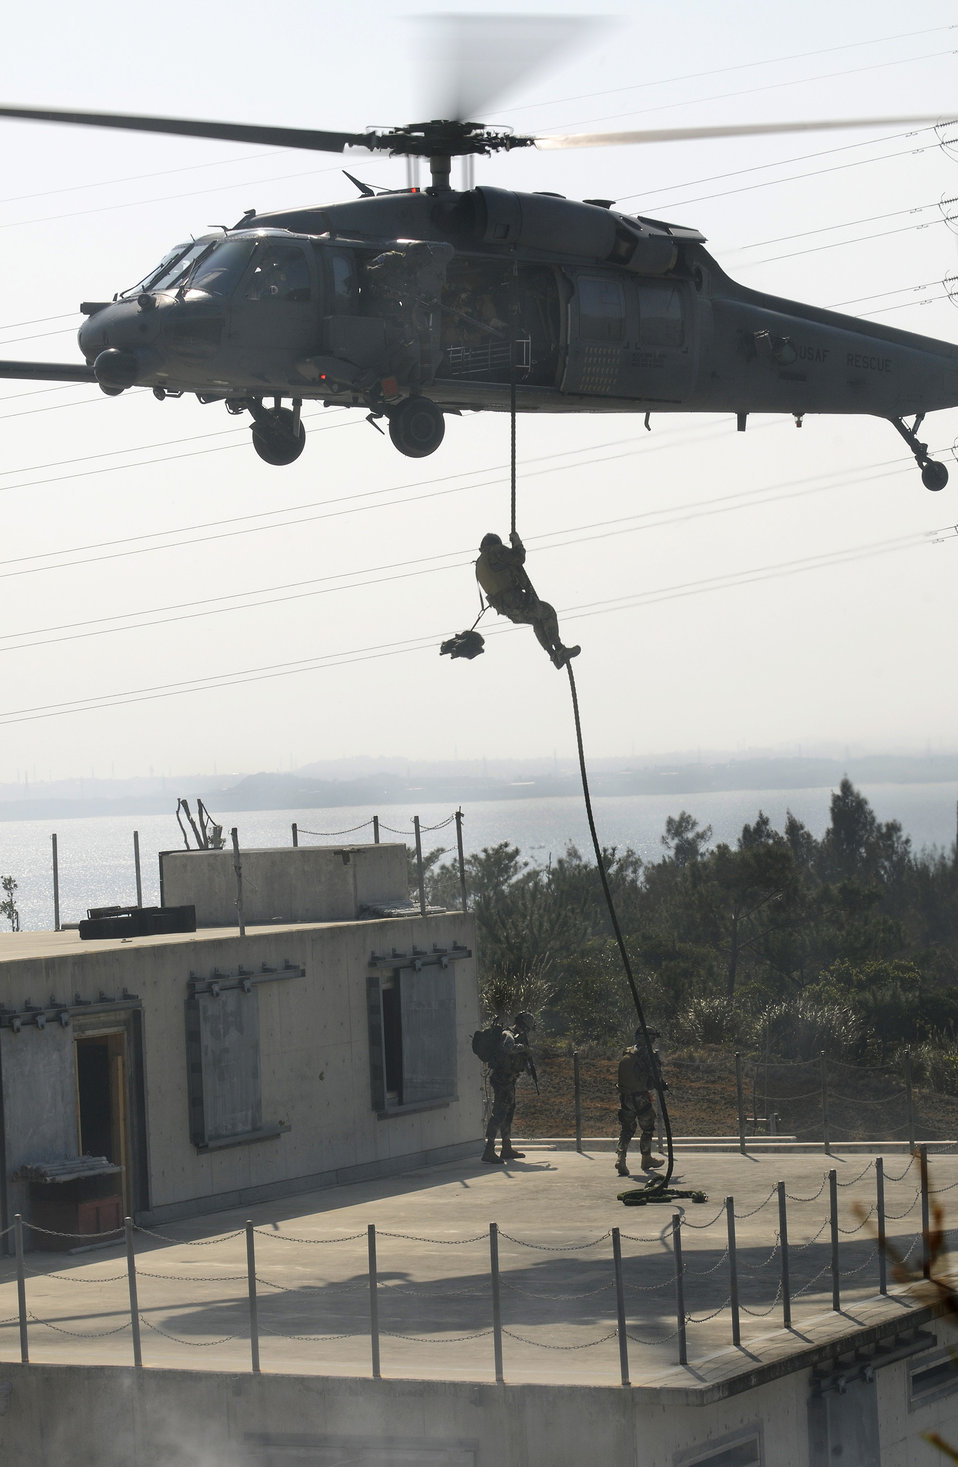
33rd Rescue Squadron wins 2009 Air Force's Verne Orr Award

Pararescuemen assigned to the 31st Rescue Squadron at Kadena Air Base, Japan, fast rope from an HH-60G Pave Hawk helicopter during exercise Cope Angel 09-1 in Japan.